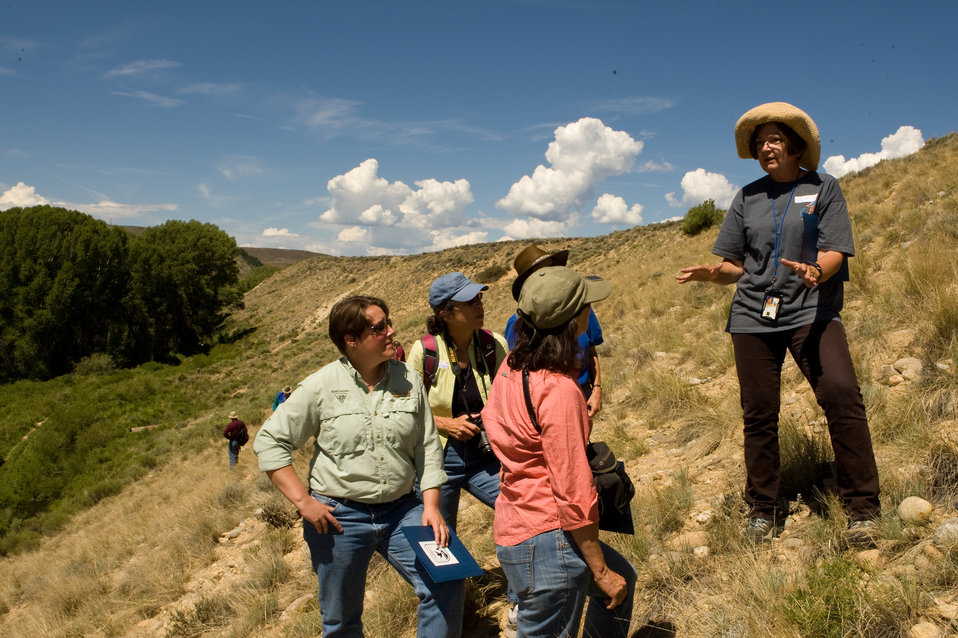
Colorado Rare Plant Conservation Initiative

The Colorado Rare Plant Conservation Initiative (RPCI) is a partnership of 23 statewide and regional agencies, private organizations, and academic institutions working to conserve 121 rare plants in Colorado. As part of these efforts the group developed the Colorado Rare Plant Conservation Strategy, developed Best Management Practices to reduce energy development impacts, addressed climate change, and developed focused strategies for the conservation of individual species at eight priority landscapes. The group has also worked to coordinate volunteer efforts for plant conservation across the state.